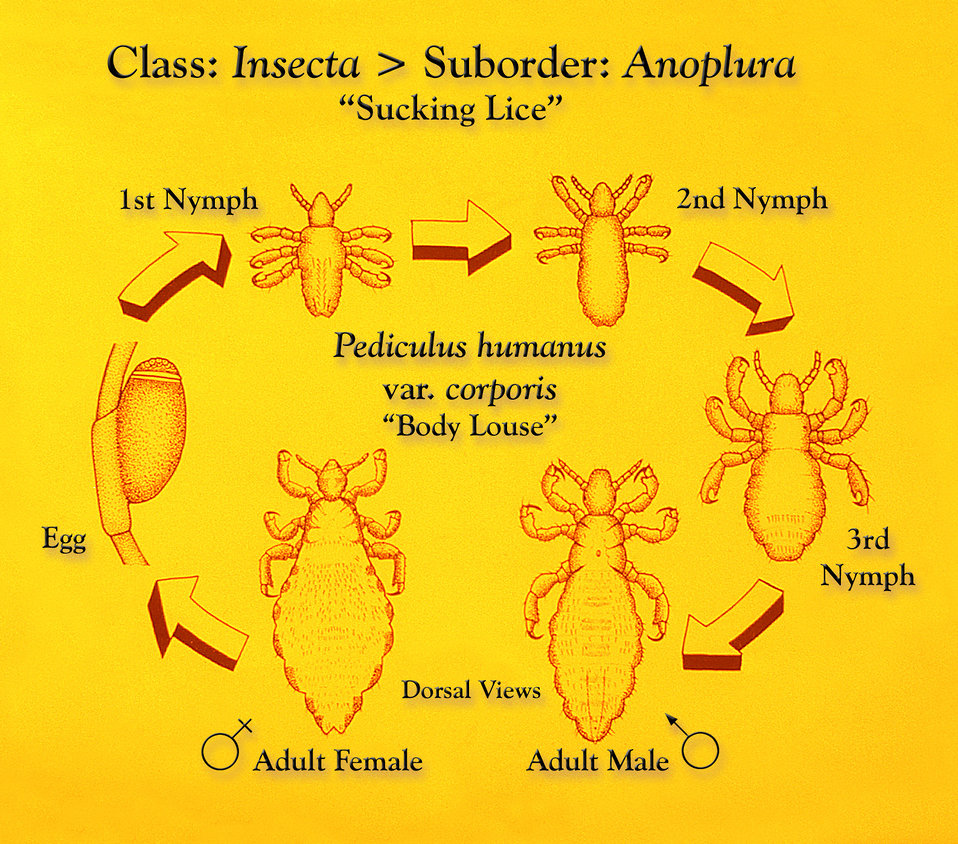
This illustration depicts the life cycle of a 'sucking louse', Pediculus humanus var. corporis, and the morphologic changes that take place at each successive developmental plateau reached.